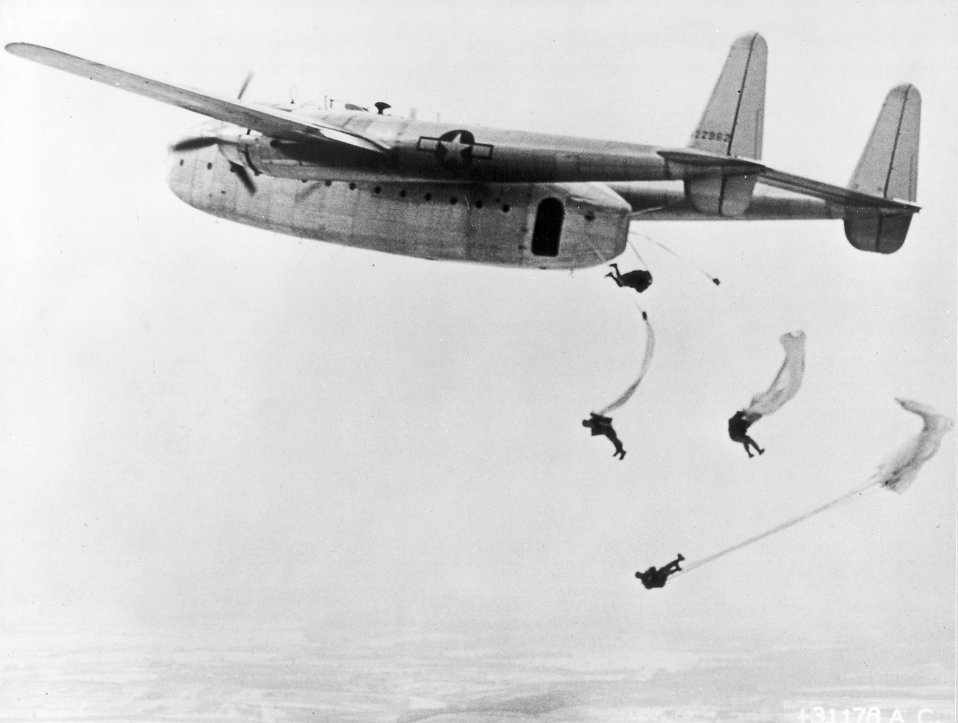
Paratroopers jump from a C-82

1940's -- Paratroopers jumping from a Fairchild C-82